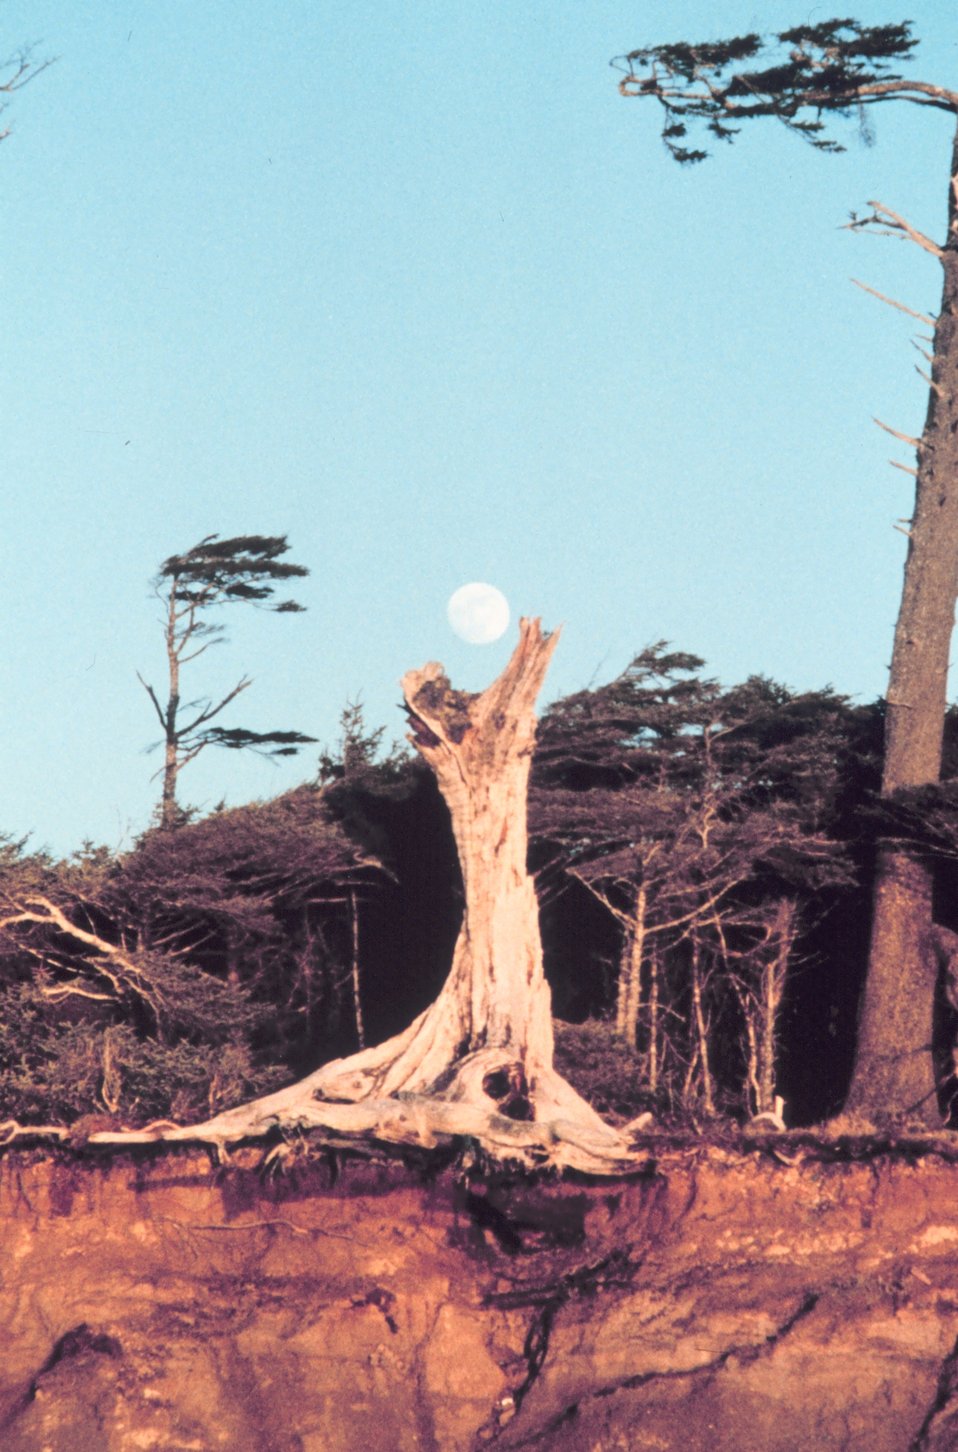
A full moon portends spring tides and clamming season.